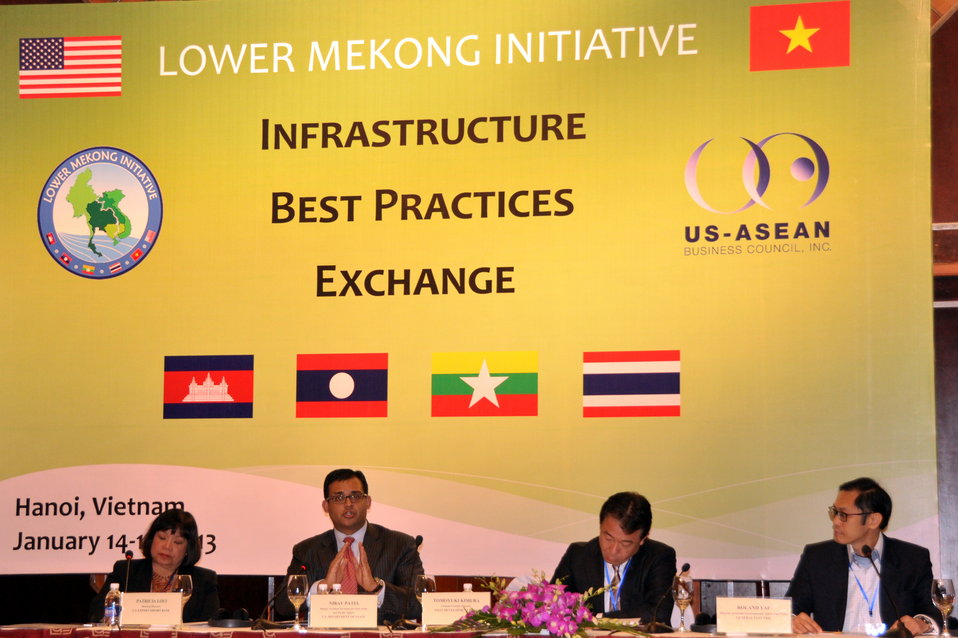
Panel discussion at the LMI Infrastructure Best Practices Exchange

Hanoi: January 14, 2013